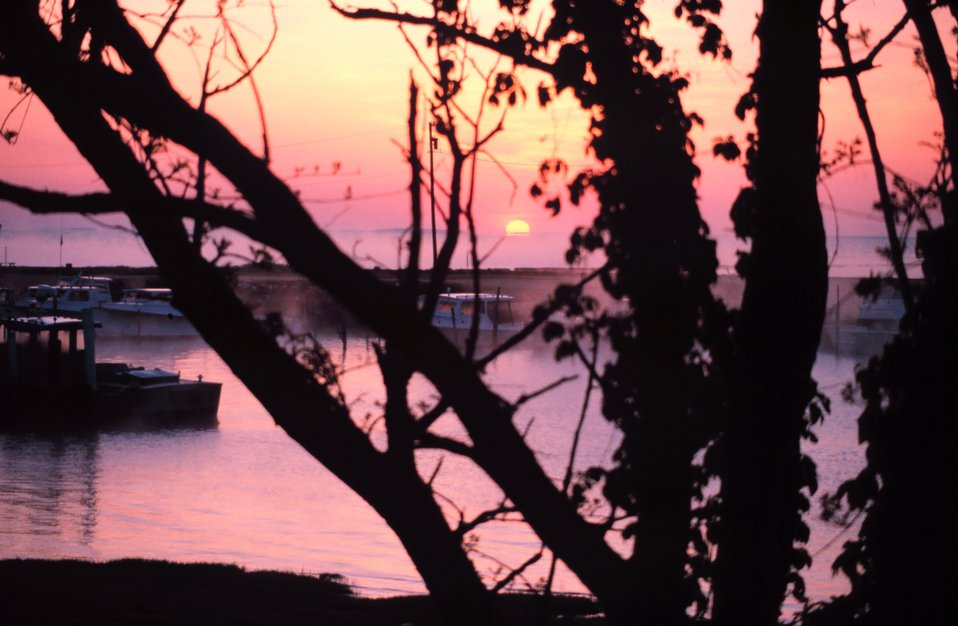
Sunrise overlooking Fishing Creek and the Chesapeake bay through the early morning fog.